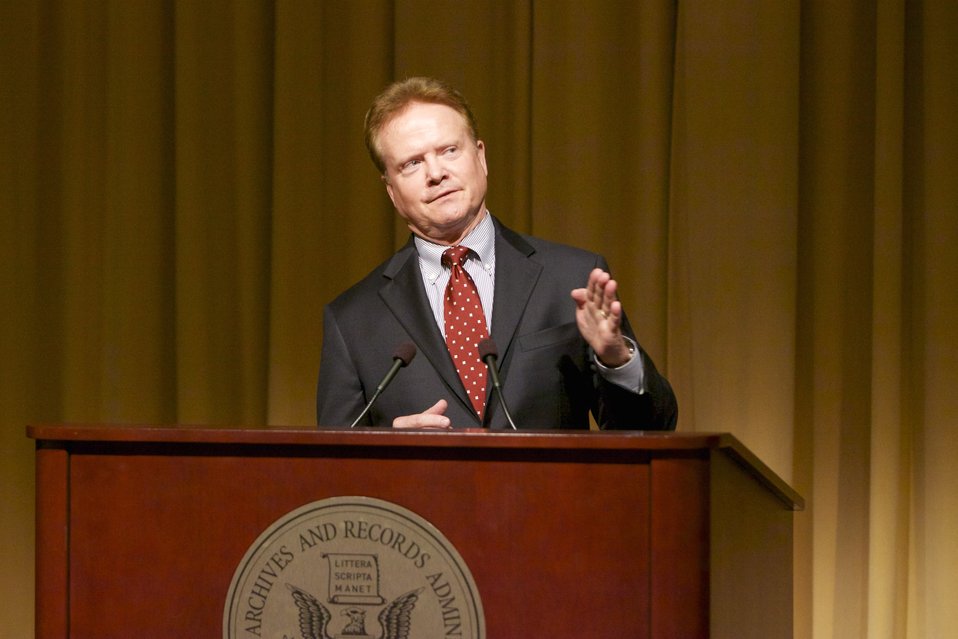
I Heard My Country Calling: A Memoir; James Webb, Former Senator and author, discusses his book